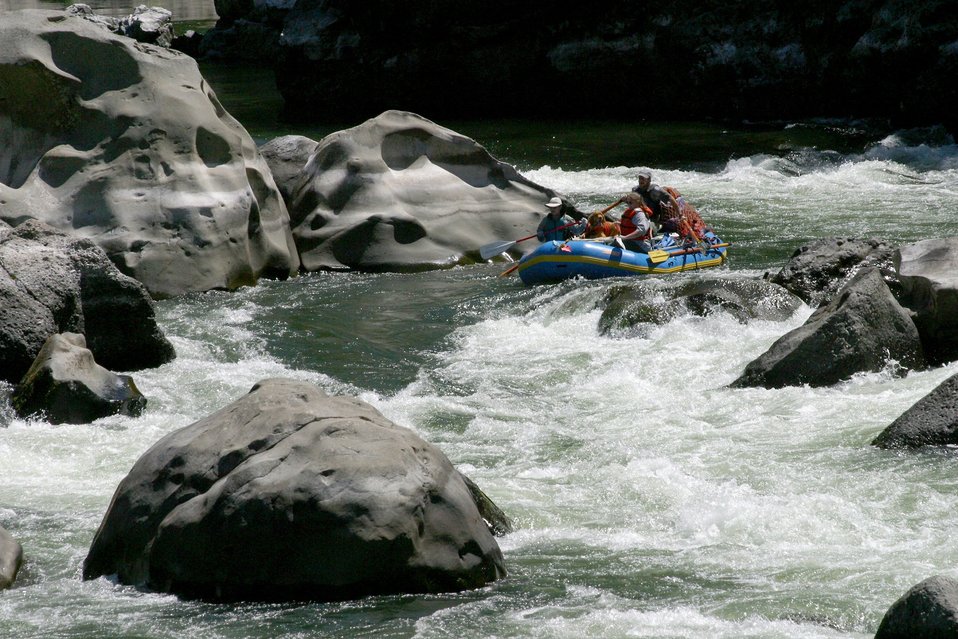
Boaters negotiate Blossom Rapids.